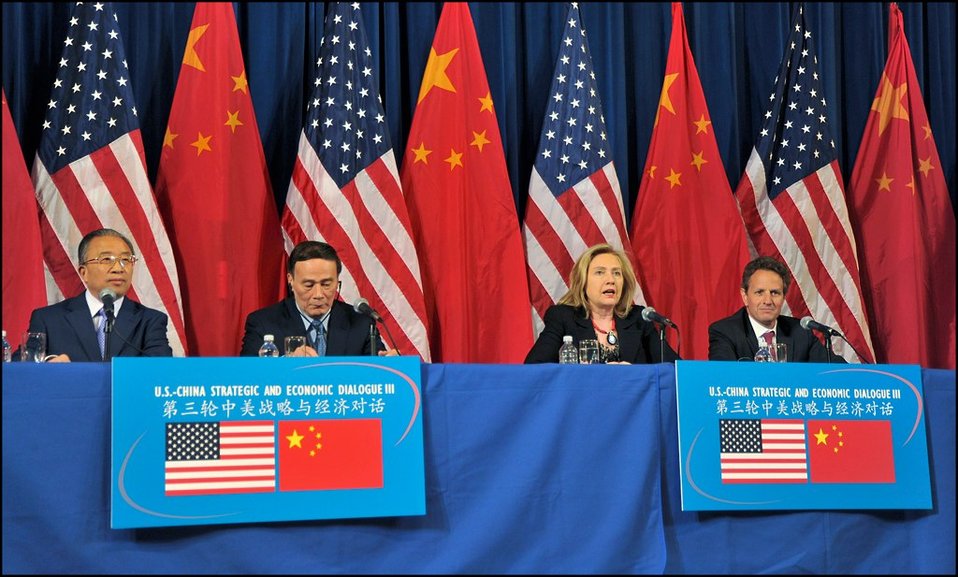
U.S.-China Strategic and Economic Dialogue concluded on Tuesday with statements from Chinese State Councilor Dai, Chinese Vice Premier Wang, Secretary Clinton and Secretary Geithner.